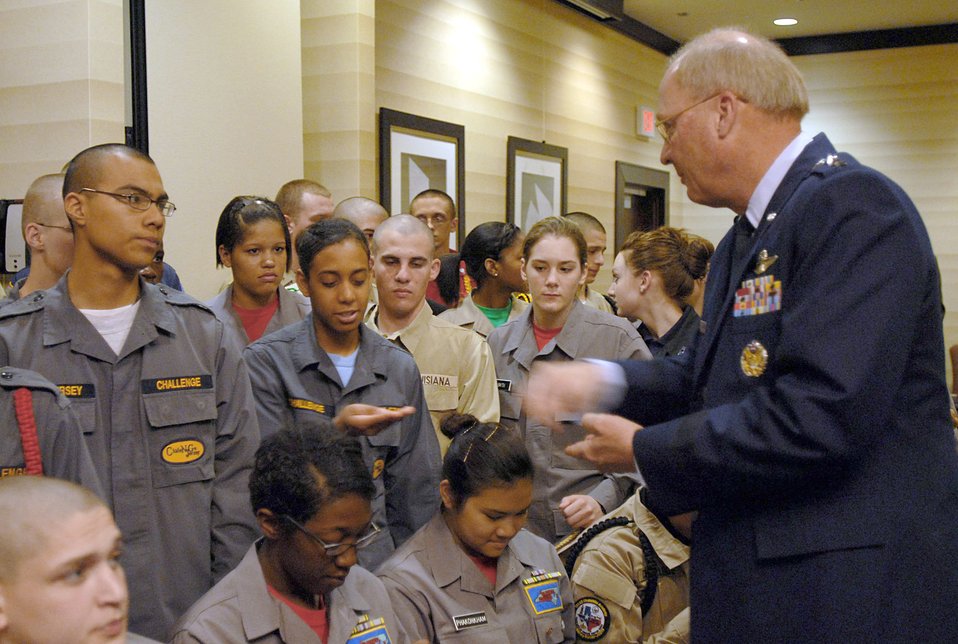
National Guard Youth Foundation ChalleNGe Gala 2011

Gen. Craig McKinley gives each cadet a challenge coin before the National Guard Youth Foundation's 2011 ChalleNGe Champions Gala March 1, 2011, in Washington. this year's gala was the celebrated the program's 100,000th graduate, cadet Tori Walston, from Louisiana. General McKinley is the chief of the National Guard Bureau.